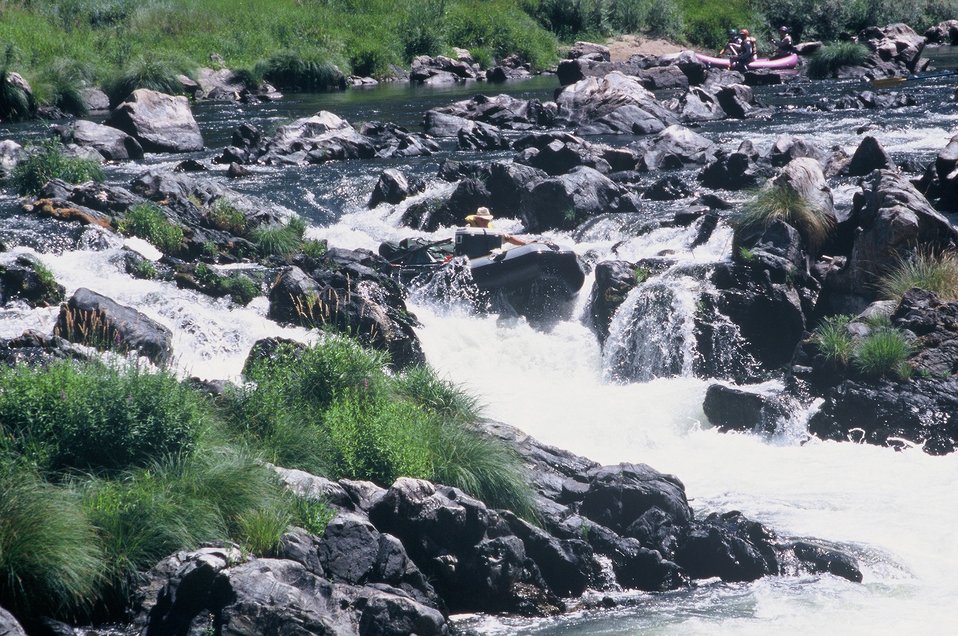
Middle Falls of Rainie Falls